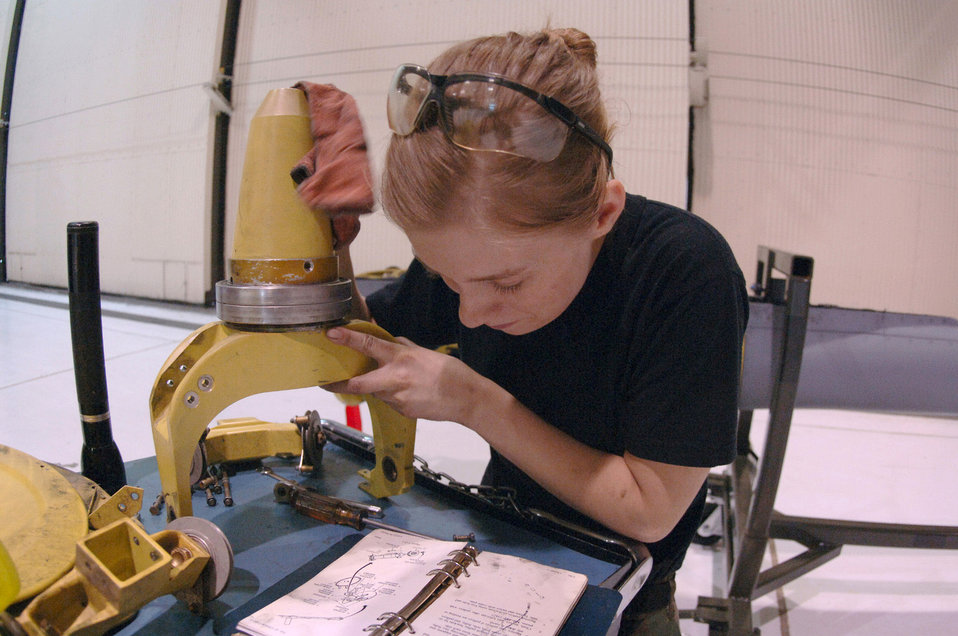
More than routine maintenance

Airman Rebecca Perkins consults technical data as she inspects part of the boom assembly on a KC-135 Stratotanker during a periodic inspection at Grand Forks Air Force Base, N.D. More than eight career fields and 50 Airmen work together to ensure the almost 50-year-old backbone of the Air Force's global reach ability is ready for service throughout the world. Airman Perkins is a hydraulics apprentice with the 319th Maintenance Squadron.